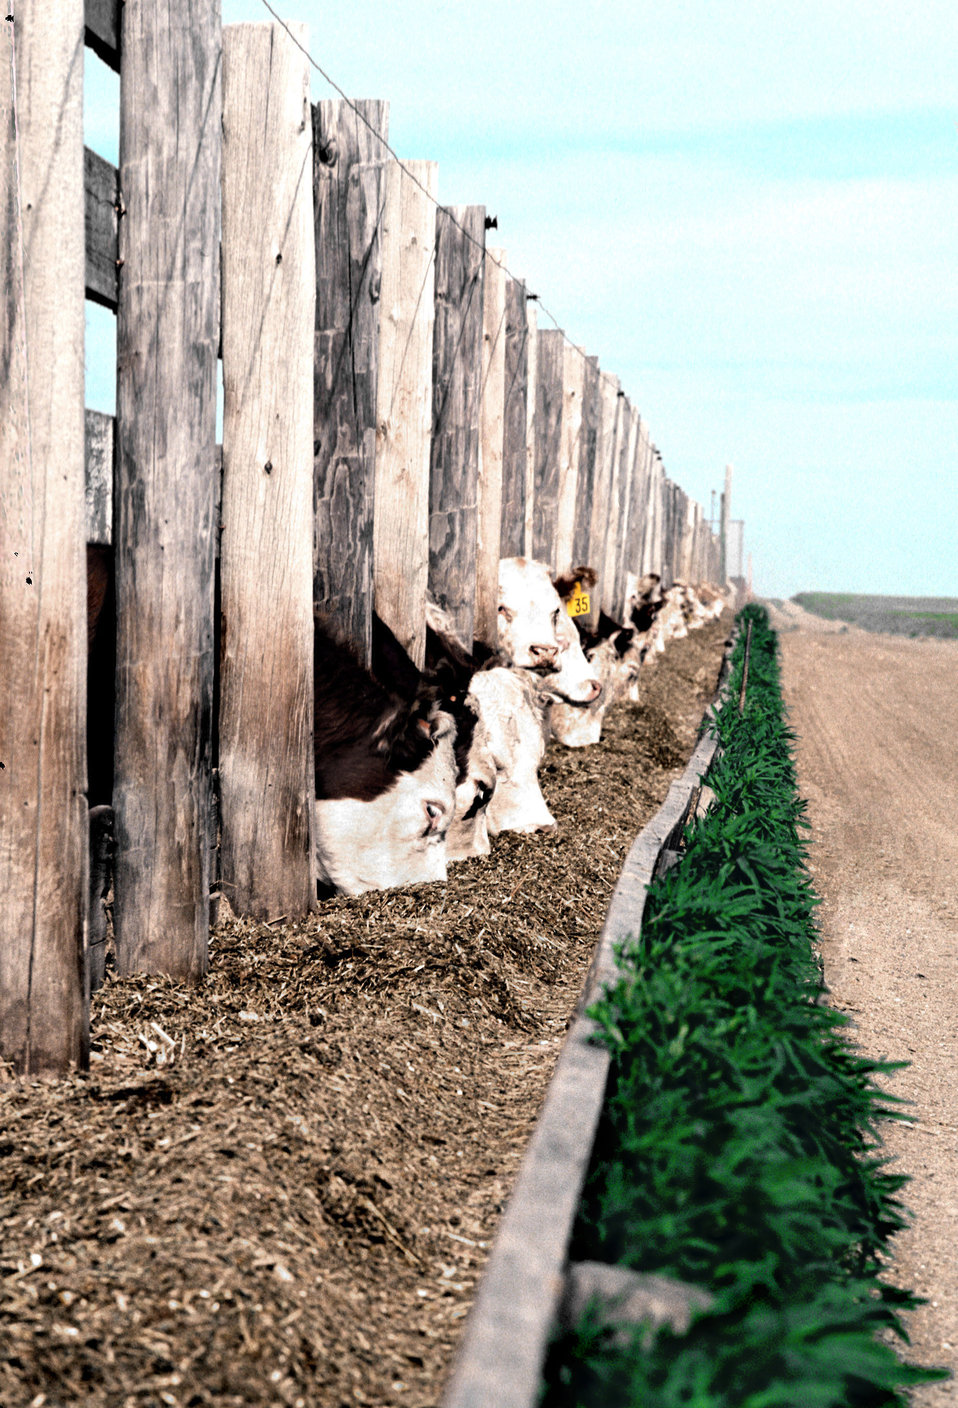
Cattle eat at feedlot on Oct. 19, 2005. Producers and marketers can minimize pre-slaughter fasting stress in cattle by feeding animals regularly. The practice could do a lot to maintain the normal balance of rumen microbes and suppress bacterial like E. coli 0157:H7.